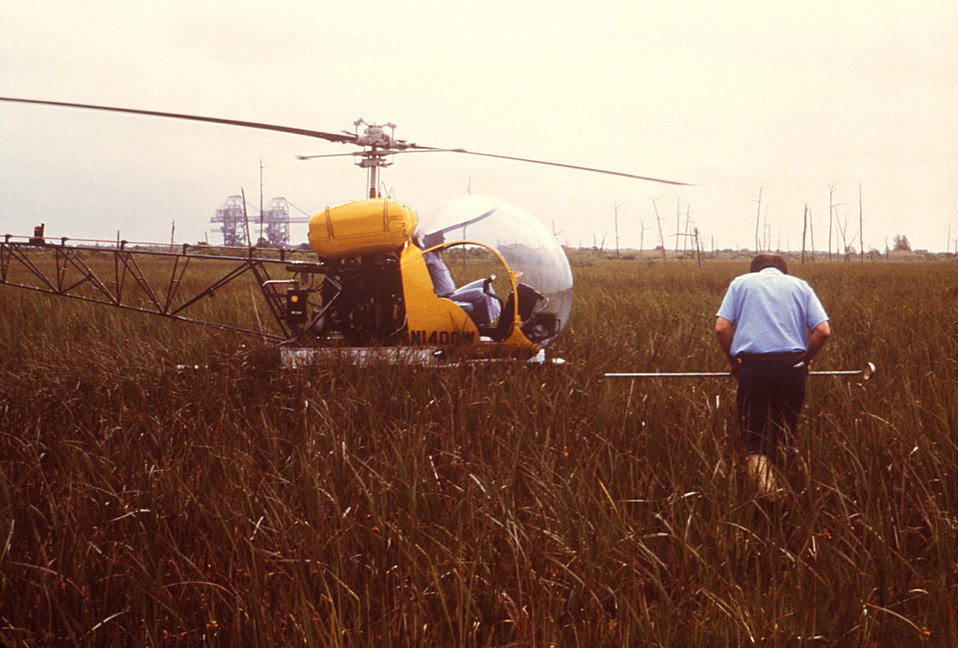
This 1978 photograph depicted an entomologic field technician who by using a helicopter to access remote areas, was in the process of investigating the presence of larval mosquitoes known to thrive in this New Orleans, Louisiana wetland.